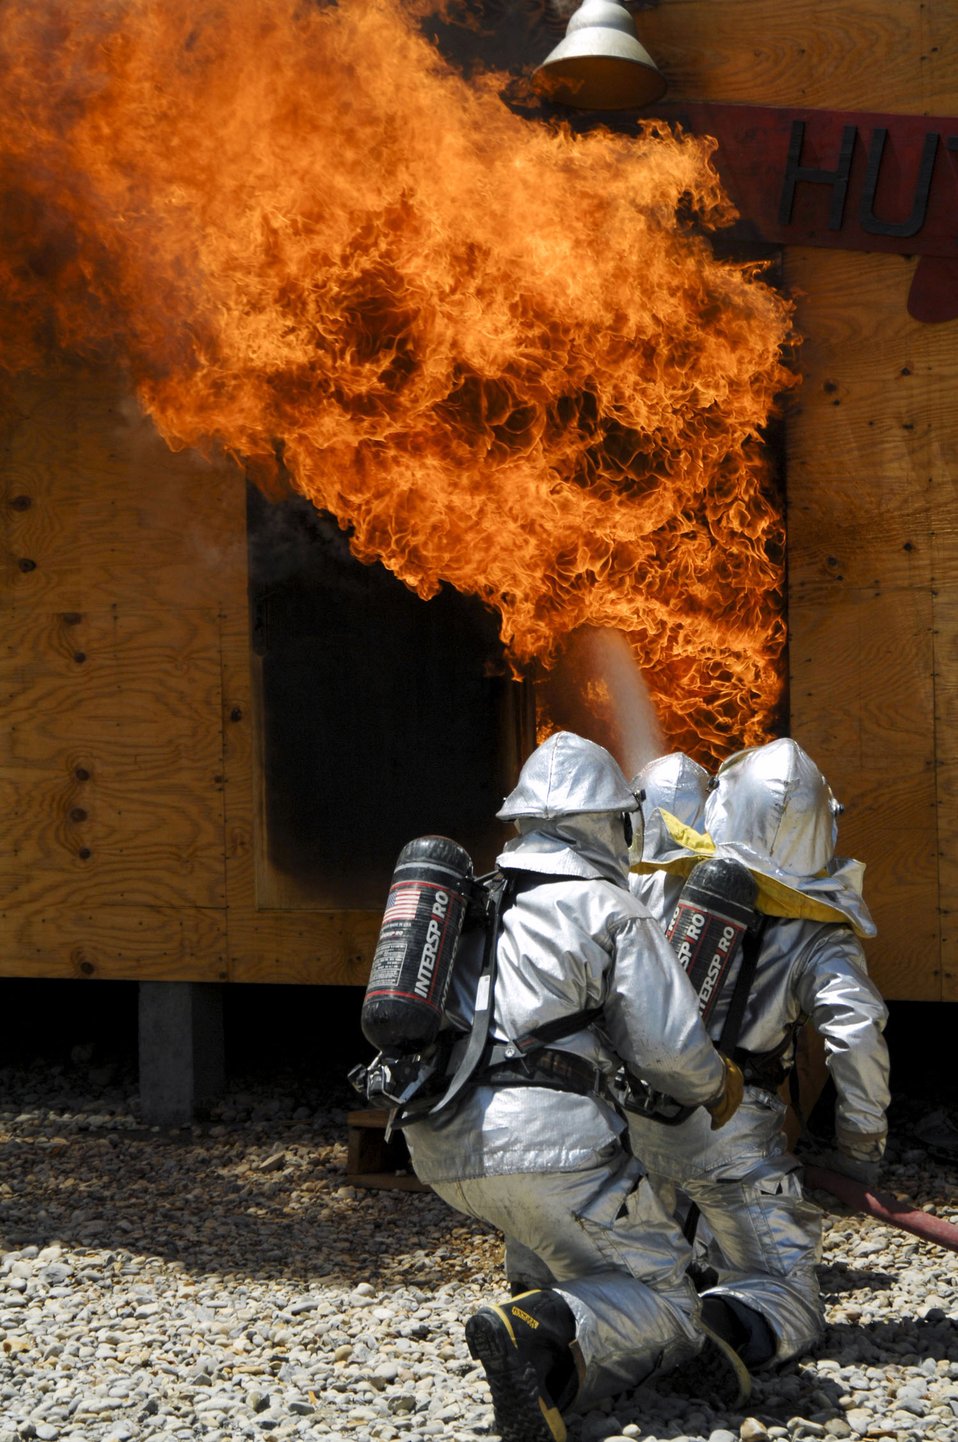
Fire fight in Iraq for the Army

Firefighters perform an exterior attack on a fire in the Army Motor Pool June 19 on Camp Adder, Iraq. Due to munitions contained in the building and no potential for loss of life, the firefighters switched to defensive operations for the blaze using six trucks to keep it under control and confined to the building. The firefighters are from the 407th Expeditionary Civil Engineer Squadron at Ali Air Base, Iraq.